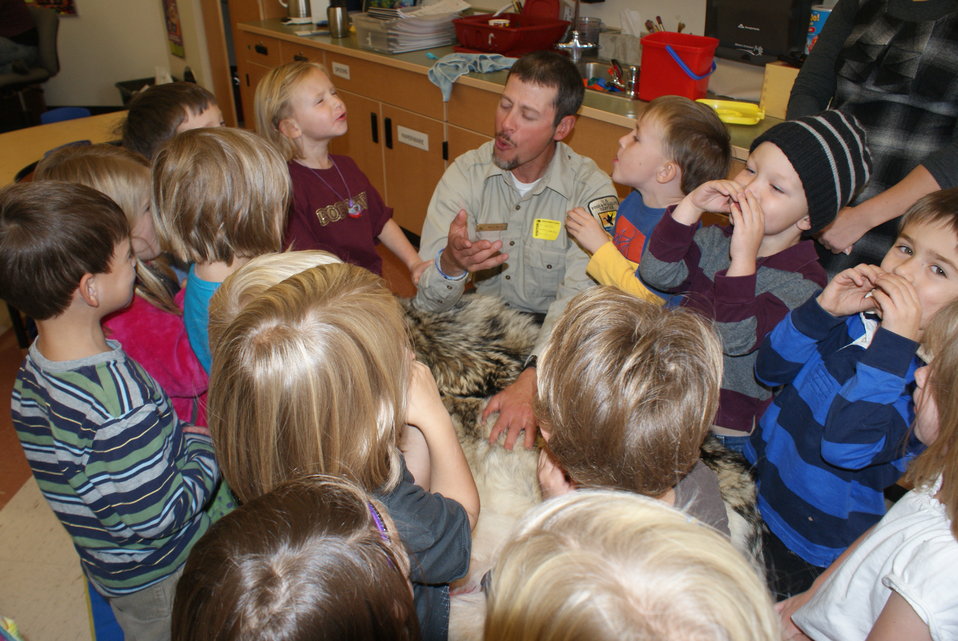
Scientists in the Community Program

U.S. Fish and Wildlife Service Mountain-Prairie Region Deputy ARD for External Affairs, Matt Kales, introduces early childhood education students at William Roberts Elementary School in Denver to some of Colorado's native and historic wildlife species.